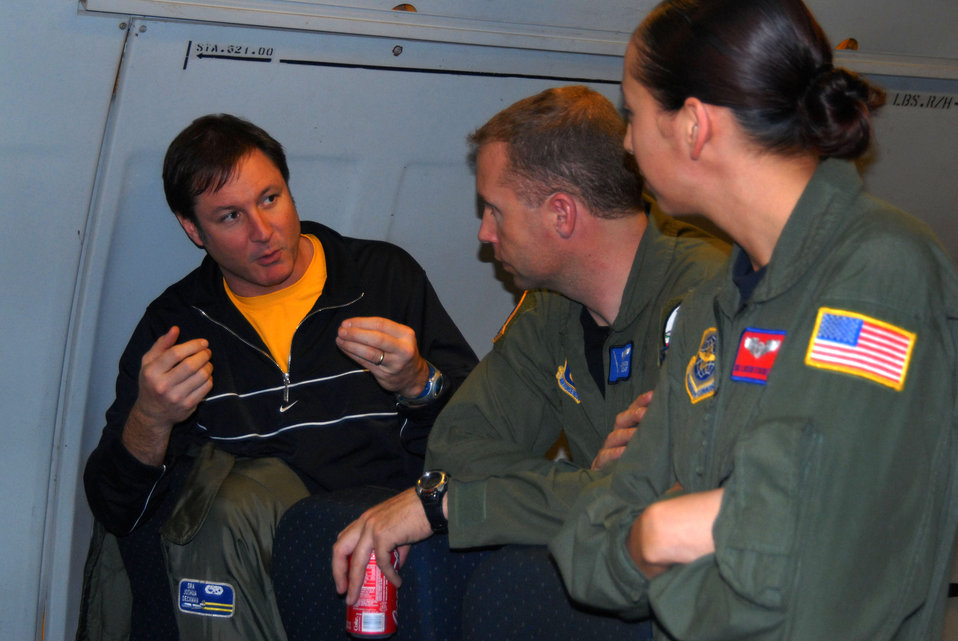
Edwards, Travis Airmen 'Do something amazing'

Tim Gilmore (left) talks with Tech. Sgt. Mark O'Conner and Staff Sgt. Lucero Stockett on board a KC-10 Extender Feb. 7 above Edwards Air Force Base, Calif. Film crews were on board the KC-10 filming an aerial refueling of an F-22 Raptor. Mr. Gilmore is the Air Force account director at GSD&M, the Air Force's contracted advertising agency in Austin, Texas. Sergeant O'Conner is from Edwards AFB, and Sergeant Stockett is a KC-10 boom operator from Travis AFB, Calif.